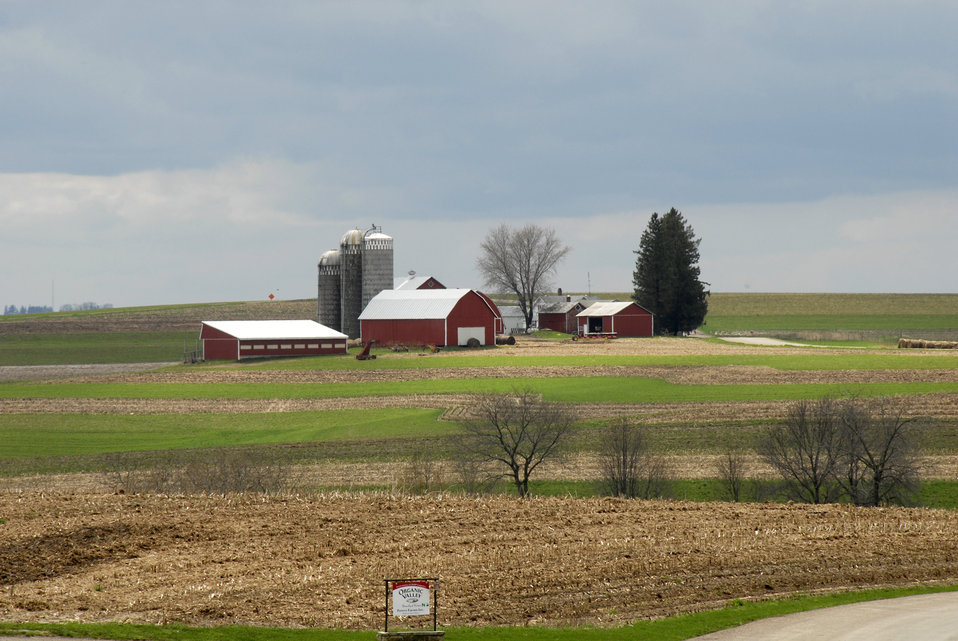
A family farm sits on small knoll in La Crosse, Wisconsin on April 25, 2008. The U.S. Department of Agriculture’s (USDA) Natural Resource Conservation Service (NRCS) has various programs to assist farmers and ranchers in implementing and maintaining conservation practices that will enable them to have more sustainable and profitable farms and ranches.